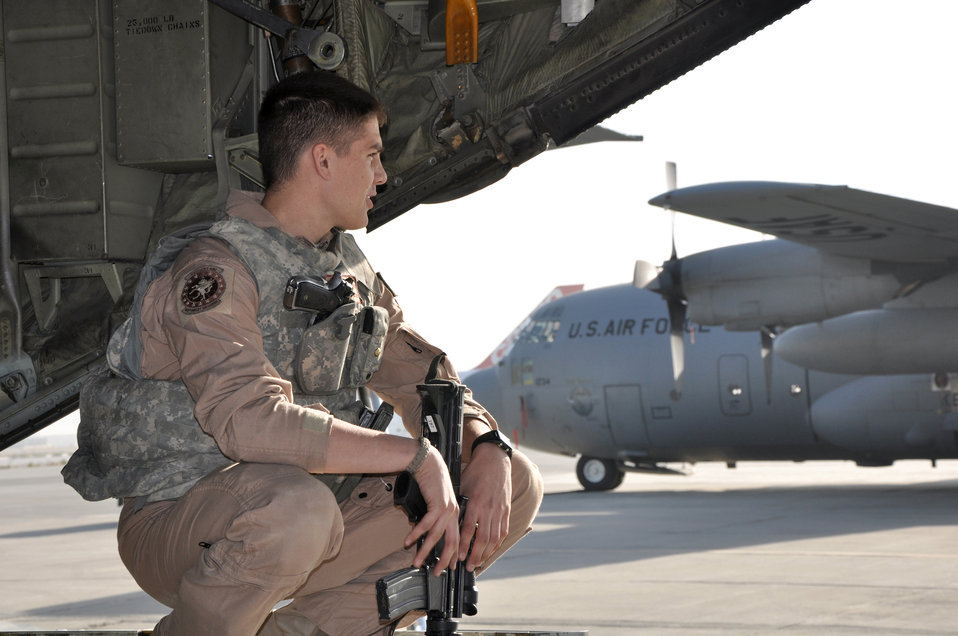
World wide wingman

Senior Airman Jordan Gunterman crouches on the ramp of a Kentucky Air National Guard C-130 Hercules at Bagram Airfield, Afghanistan. Airman Gunterman is a 379th Air Expeditionary Wing fly-away security team leader.